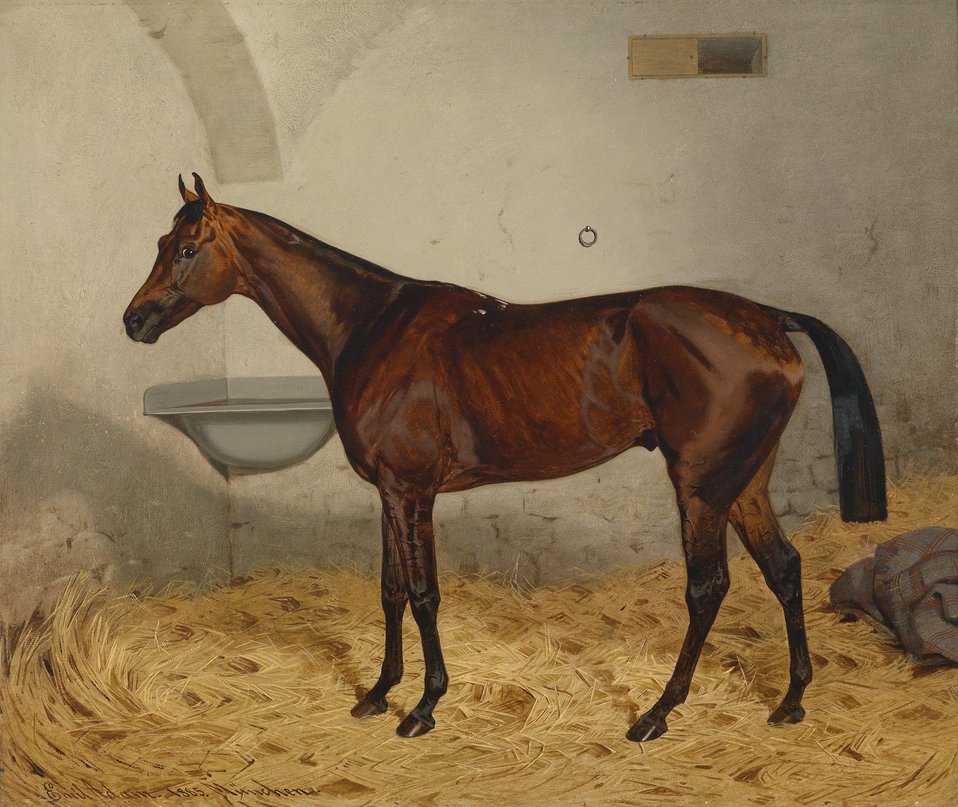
Deutsch: Pferdeportrait 'Mettalist', signiert, datiert und bezeichnet Emil Adam 1885, München, Öl auf Leinwand, 55 x 65 cm